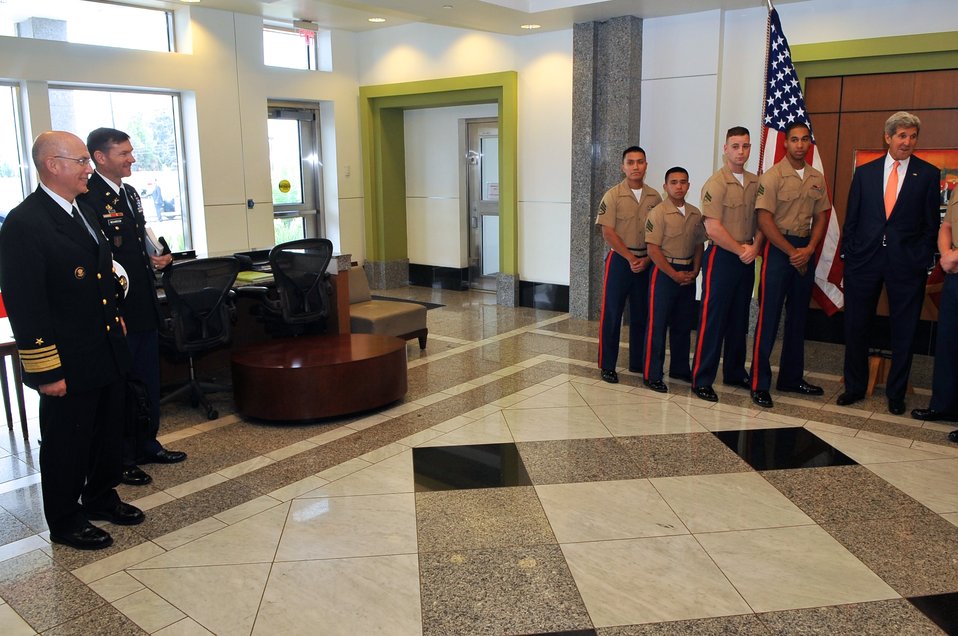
Secretary Kerry Introduces Embassy Addis Ababa Marines to Admiral Tidd

U.S. Secretary of State John Kerry introduces Marines who guard Embassy Addis Ababa in Ethiopia to two members of his traveling party - Admiral Kurt Tidd and Colonel John Richardson - during a visit to the facility in Addis Ababa, Ethiopia on May 1, 2014.